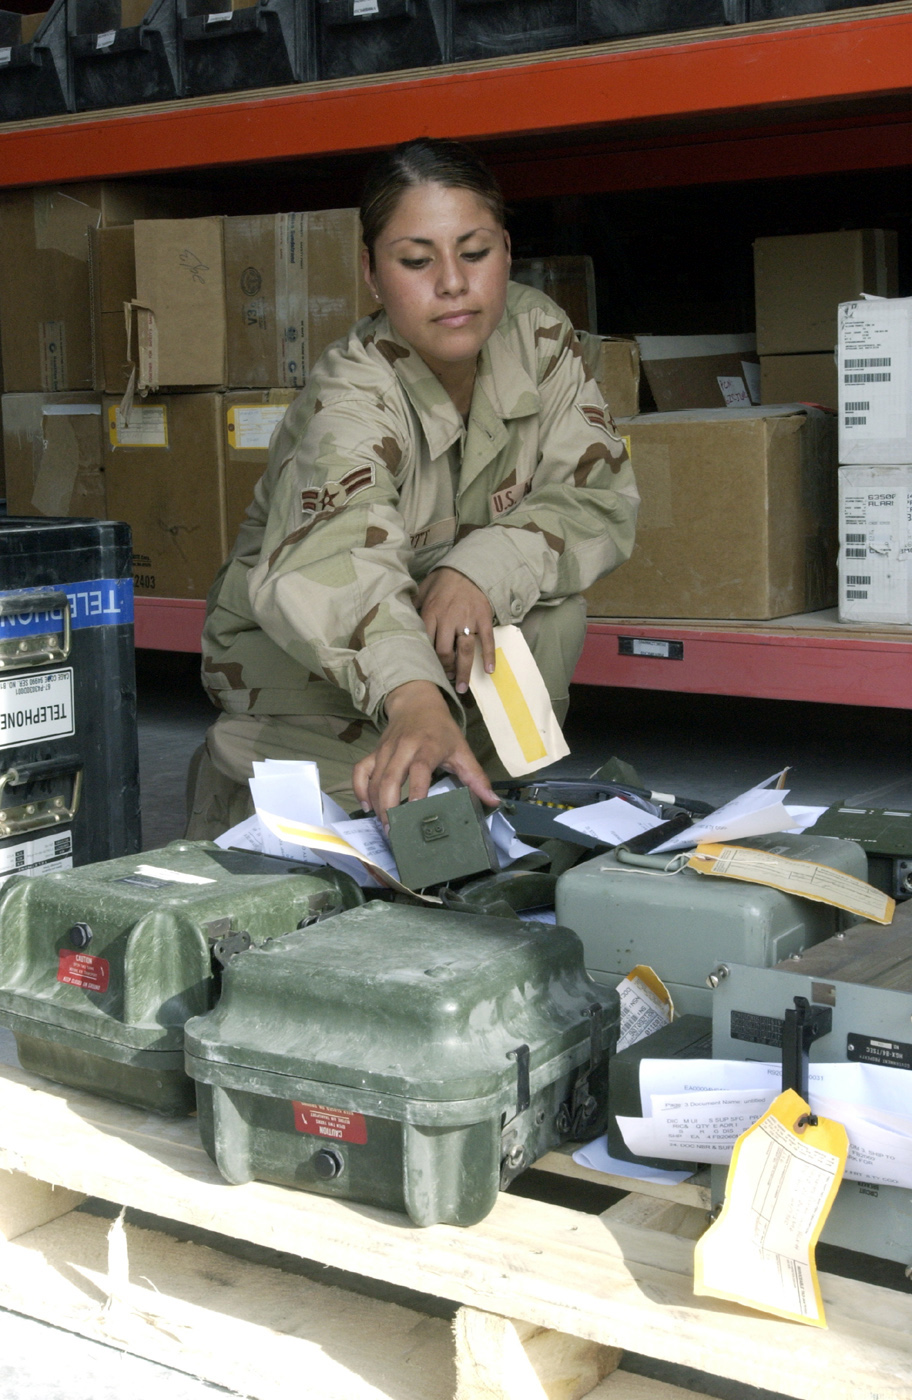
Taking inventory

SOUTHWEST ASIA -- Airman 1st Class Azalia Scott takes inventory at a forward-deployed location. She is assigned to the 379th Expeditionary Logistics Readiness Squadron and is deployed from Seymour Johnson Air Force Base, N.C.